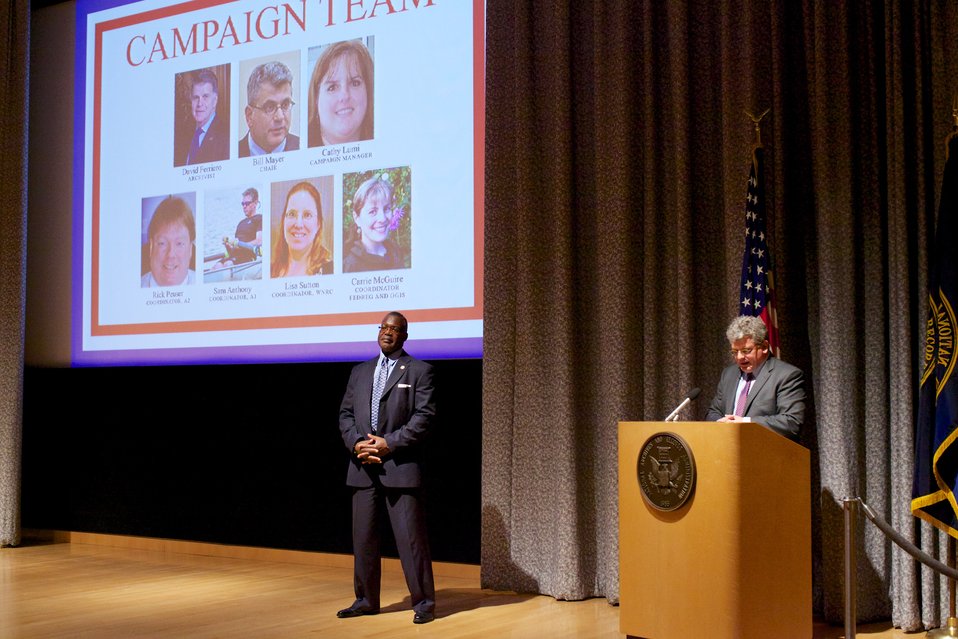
CFC Recognition Event